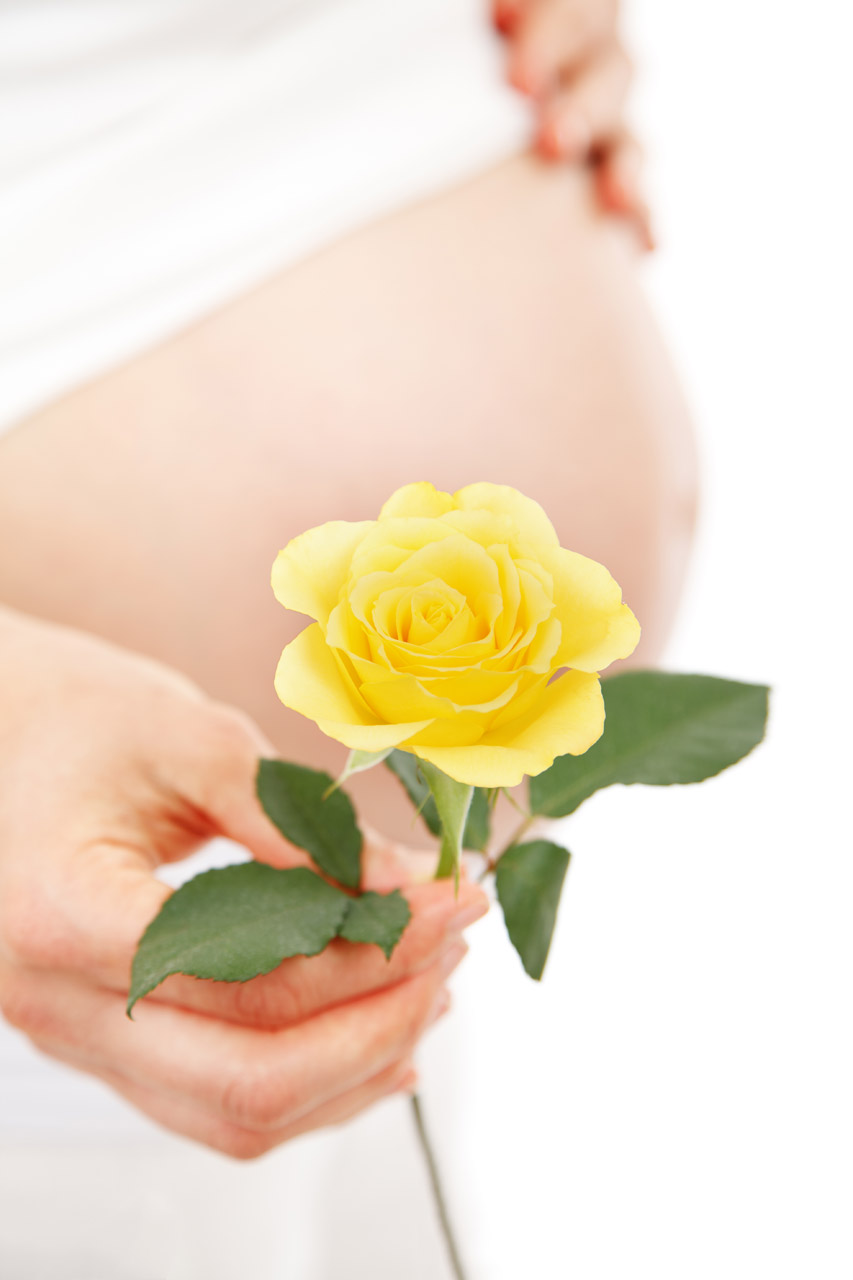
Flower and pregnant belly

Yellow rose and pregnant belly isolated on white background.